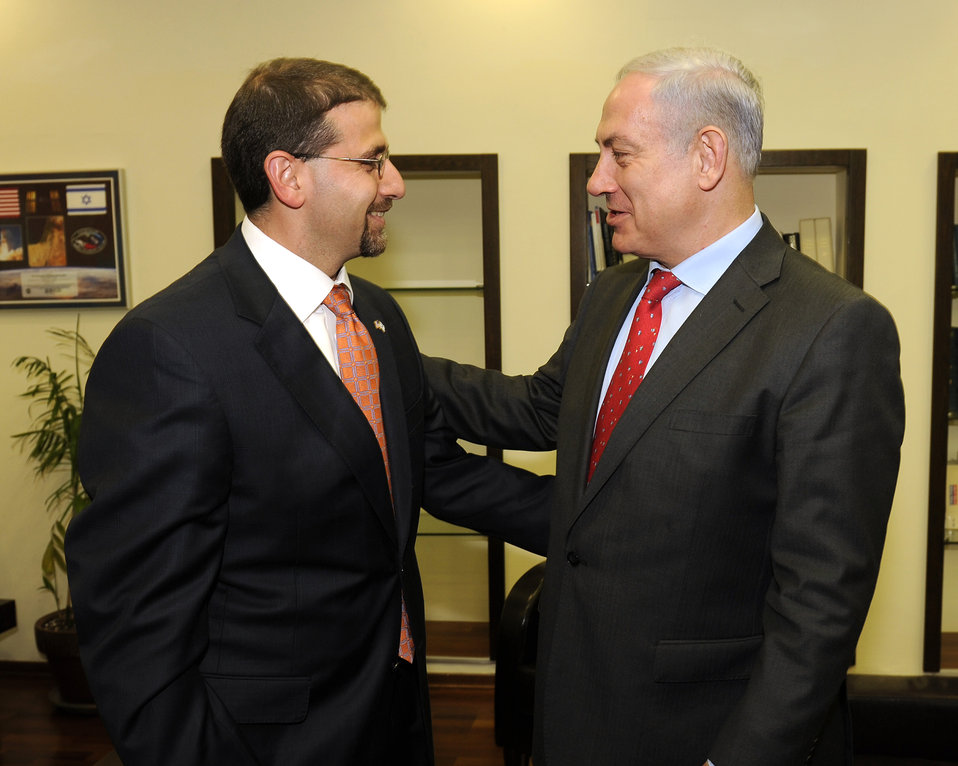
Ambassador Shapiro Meets With Israeli Prime Minister Netanyahu

U.S. Ambassador to Israel Daniel Shapiro meets with Israeli Prime Minister Benjamin Netanyahu at the Prime Minister's office in Tel Aviv, Israel, on August 4, 2011.